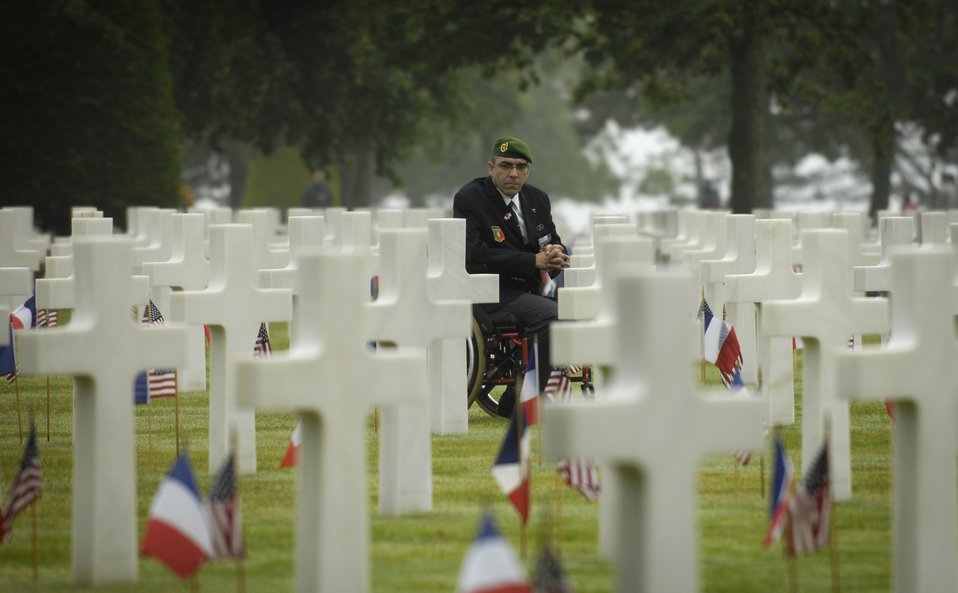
Defense secretary, servicemembers reflect on D-Day heroism

A U.S. veteran tours the American Cemetery during the 63rd Anniversary of D-Day June 6 in Normandy, France.